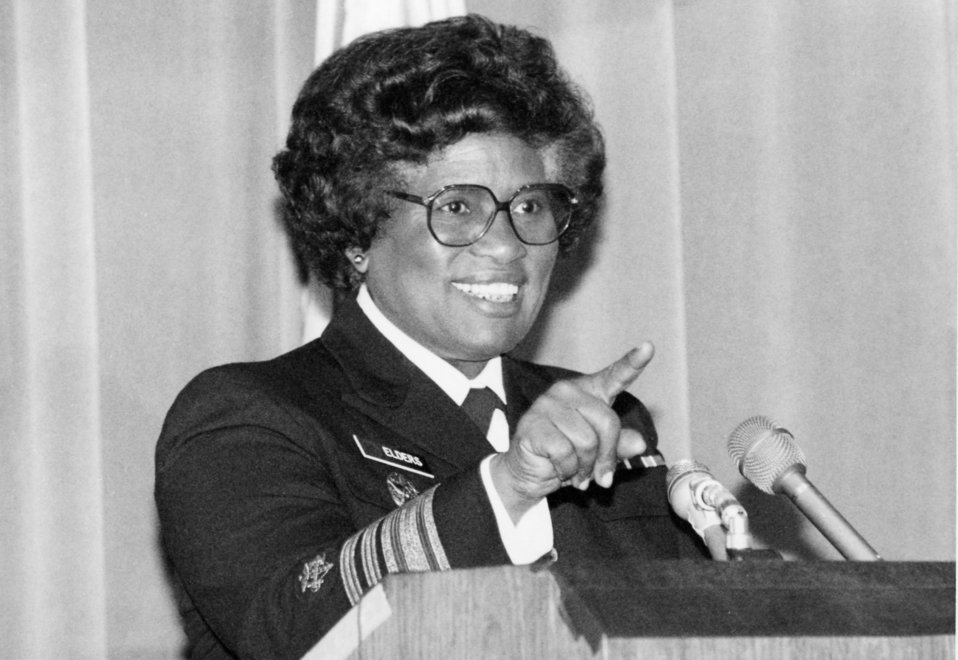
This photograph showed former Surgeon General Joycelyn Elders (1993 - 1994) as she was addressing employees at the Centers for Disease Control and Prevention.